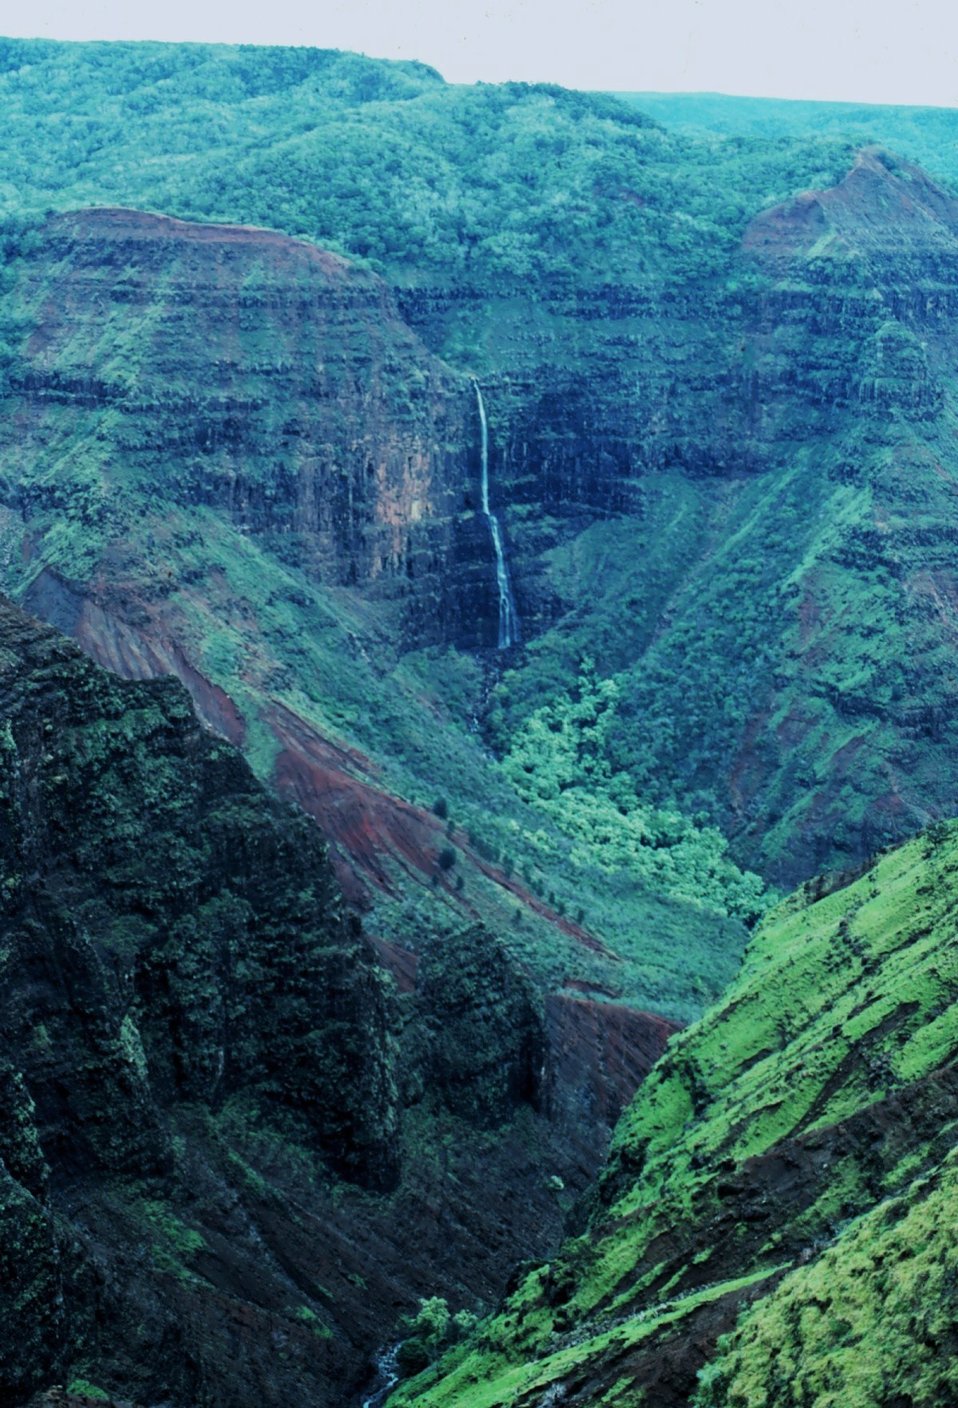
Waimea Canyon - the Grand Canyon of the Pacific